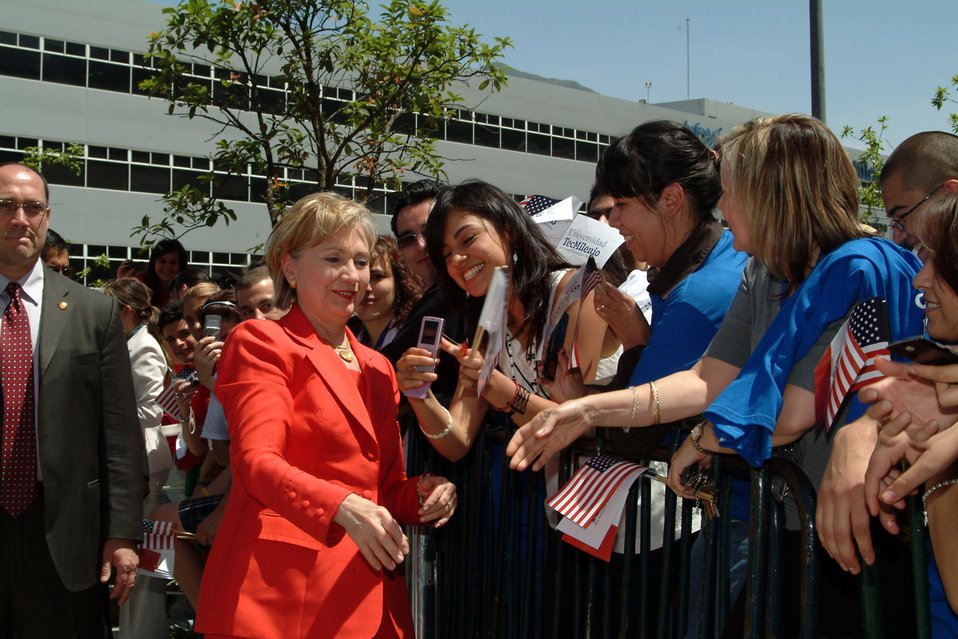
Secretary Clinton at TecMilenio University

U.S. Secretary of State Hillary Rodham Clinton greets students upon arrival at Tecmilenio University in Monterrey, Mexico March 26, 2009.